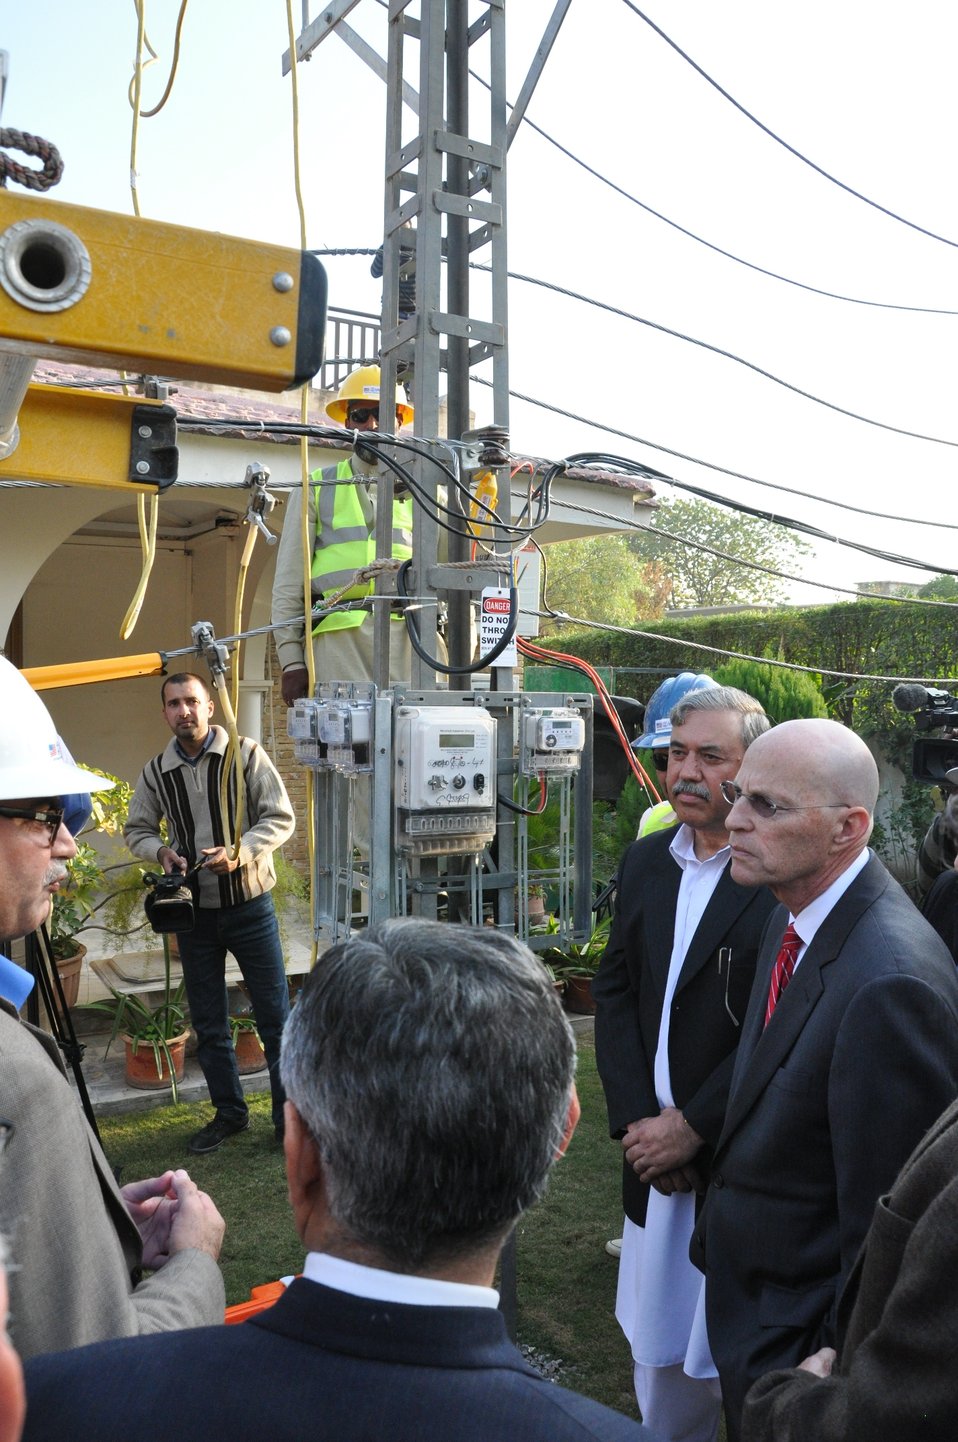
Breifing about linemen tools and loaders (4)